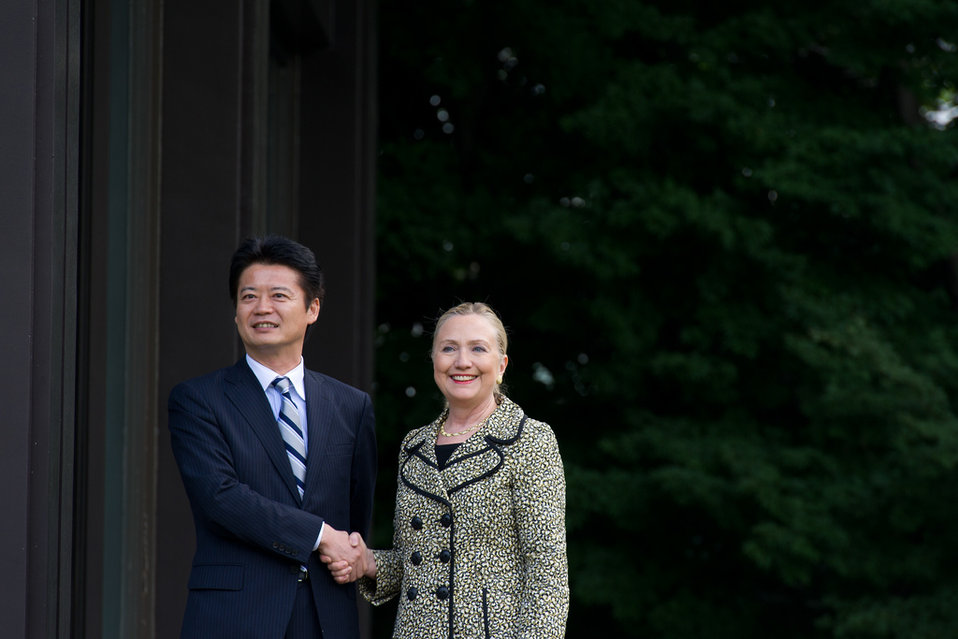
Secretary Clinton Meets With Japanese Foreign Minister Gemba

U.S. Secretary of State Hillary Rodham Clinton meets with Japanese Foreign Minister Koichiro Gemba in Tokyo, Japan, on July 8, 2012.